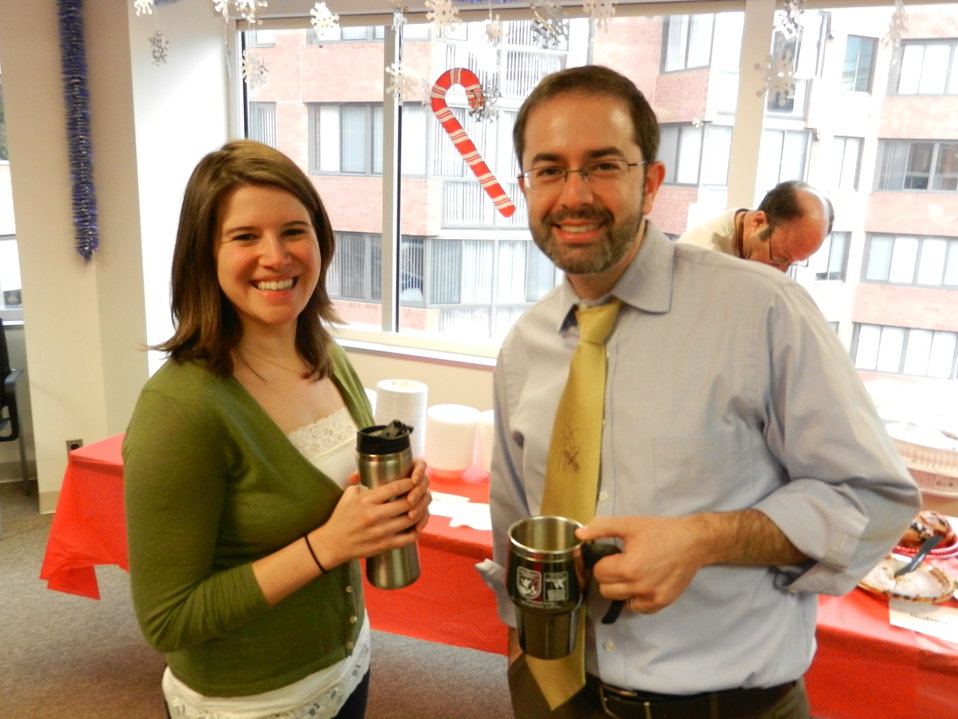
sharing a cup of joe

Employees Ella Wagoner and Noah Kahn share a cup of coffee at the holiday breakfast.